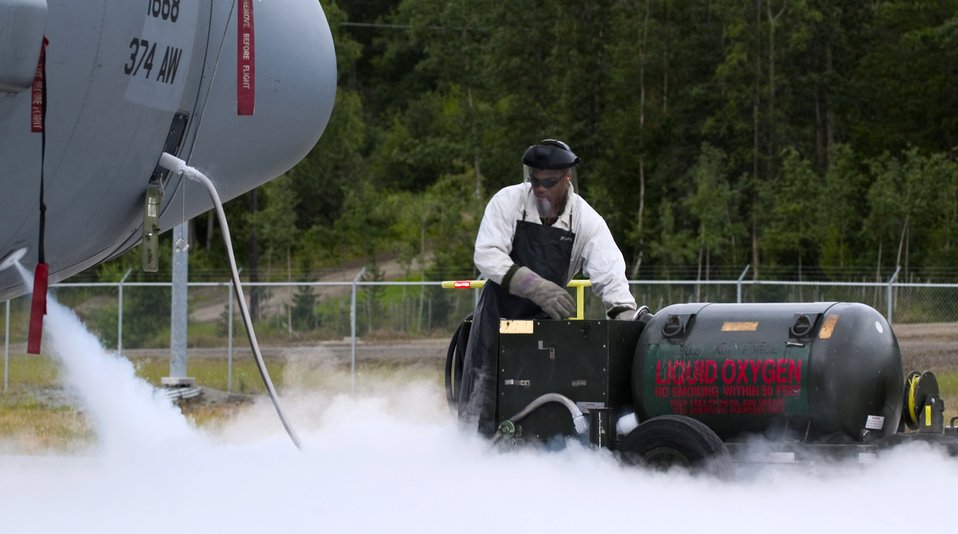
Exercise strengthens U.S., international combat skills

Senior Airman Sherman Roberts loads liquid oxygen on a C-130 Hercules at Elmendorf Air Force Base, Alaska, on July 25. Airman Roberts is with the 36th Aircraft Maintenance Unit at Yokota Air Base, Japan. The Yokota C-130s are in Alaska participating in the Pacific Air Forces exercise Cooperative Cope Thunder.